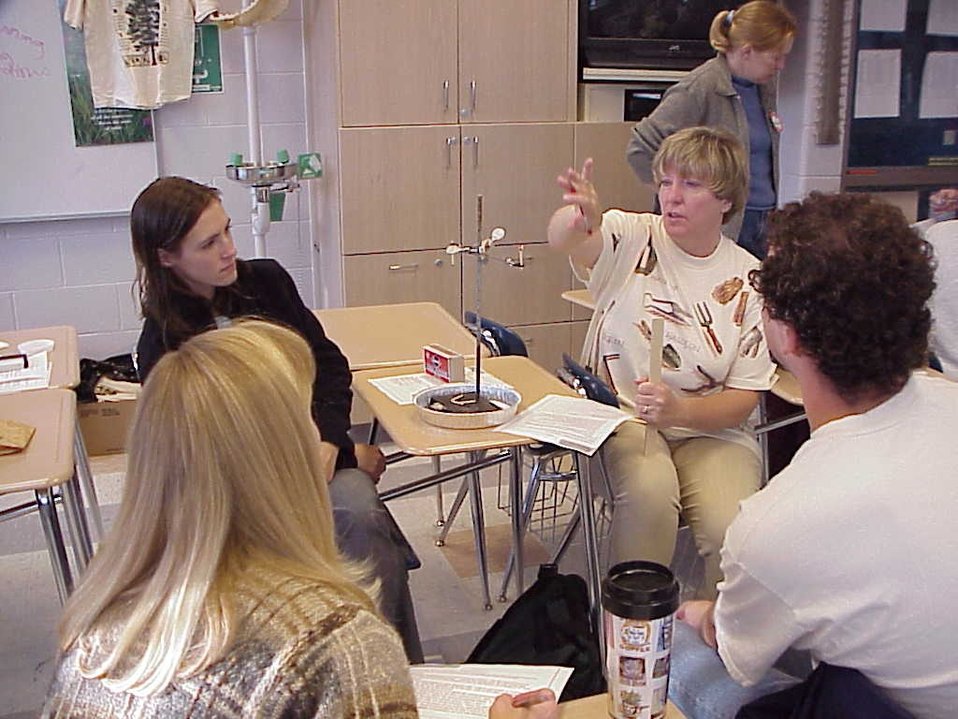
Environmental Education Fire Workshop Timberline High School Fall 2000